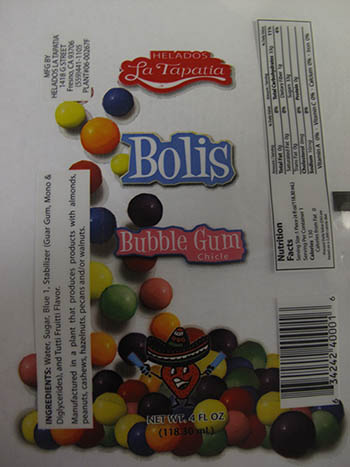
RECALLED – Ice cream products

March 19, 2014 – Product Recall – Helados La Tapatia, Inc. Recalls Products Because of Possible Health Risk.